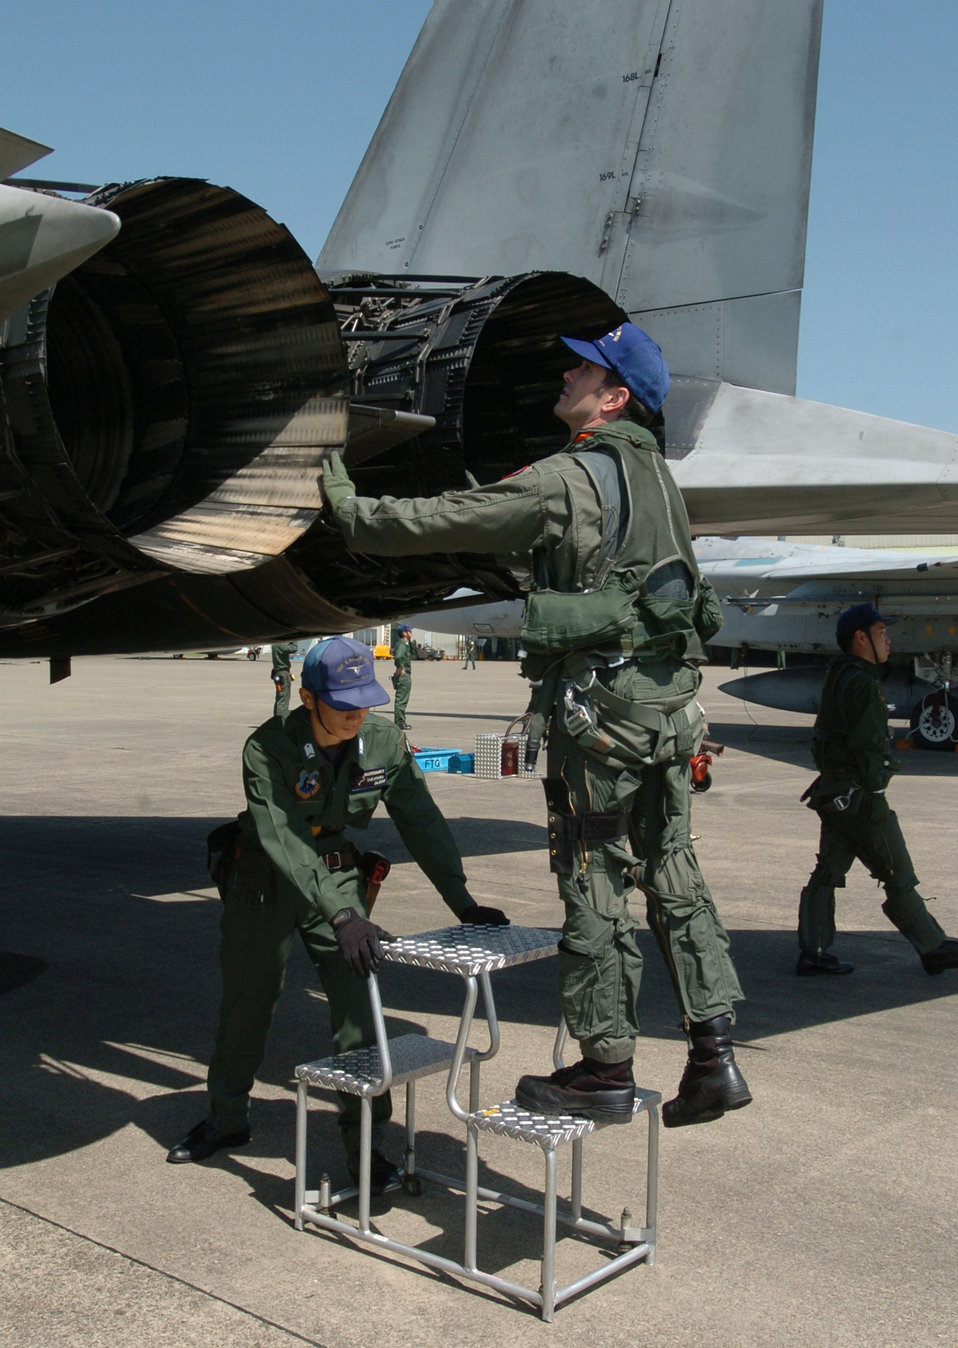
Air Force aviator strengthens U.S.-Japan friendship, ties

NYUTABARU AIR BASE, Japan -- Capt. Justin Fletcher (right) inspects his F-15 Eagle with Japanese Staff Sgt. Daigo Takayama before a mission. Captain Fletcher provides F-15 pilot techniques and counterair tactics to Japanese airmen here. He is a pilot and exchange officer assigned to the 23rd Fighter Tactical Squadron.